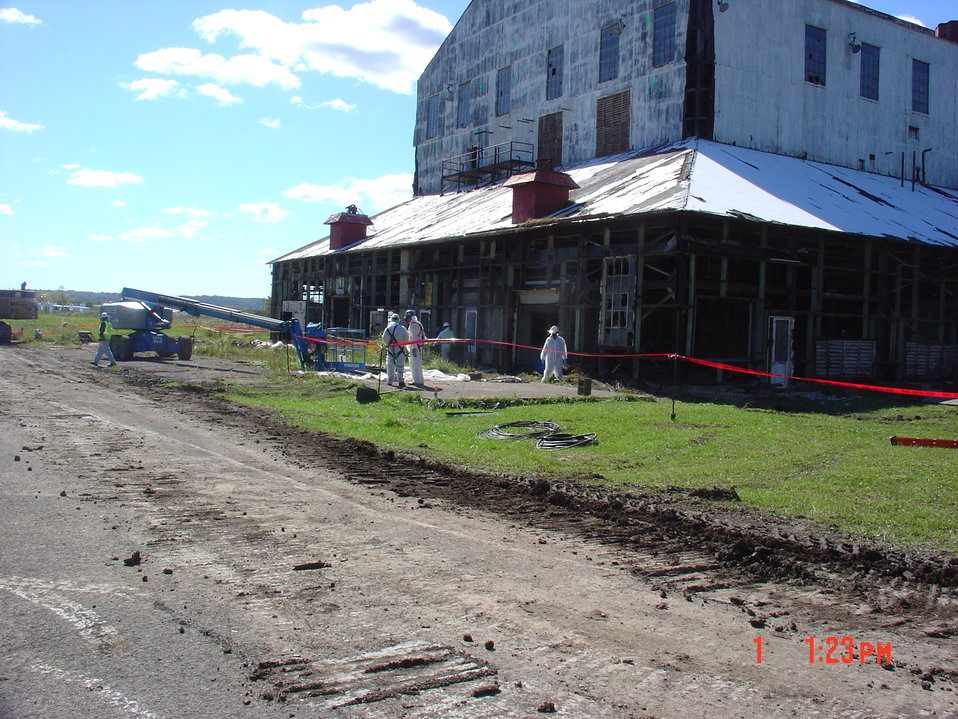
Building 401 siding removal continued.
Activities from the Niagara Falls Storage Site, which is associated with the former Lake Ontario Ordnance Works. Formerly Utilized Sites Remedial Action Program (FUSRAP), a program initiated in 1974 to identify, investigate and clean up or control sites that were part of the Nation's early atomic energy and weapons program. Activities at the sites that are eligible for FUSRAP were conducted by Manhattan Engineer District (MED) or the Atomic Energy Commission (AEC), both predecessors of the Department of Energy (DOE). The U.S. Army Corps of Engineers was assigned management of FUSRAP by Congress in 1997.